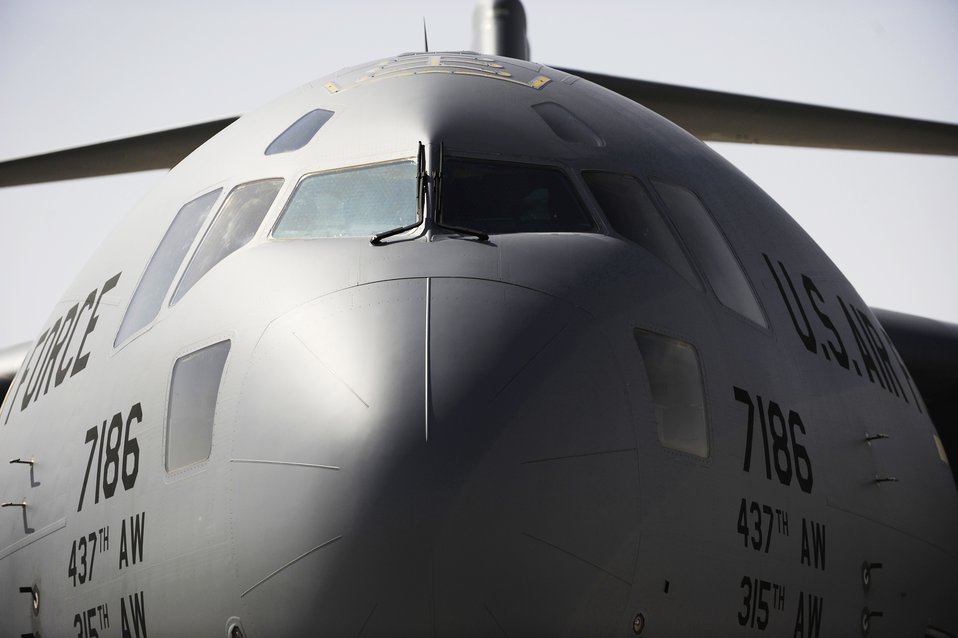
Combat air delivery over Afghanistan

A C-17 Globemaster III aircrew assigned to the 816th Expeditionary Airlift Squadron, prepares for a combat-air delivery over Afghanistan, Feb. 1, 2010, at a base in Southwest Asia. The maximum payload capacity of a C-17 is 170,900 pounds and its maximum takeoff weight is 585,000 pounds.